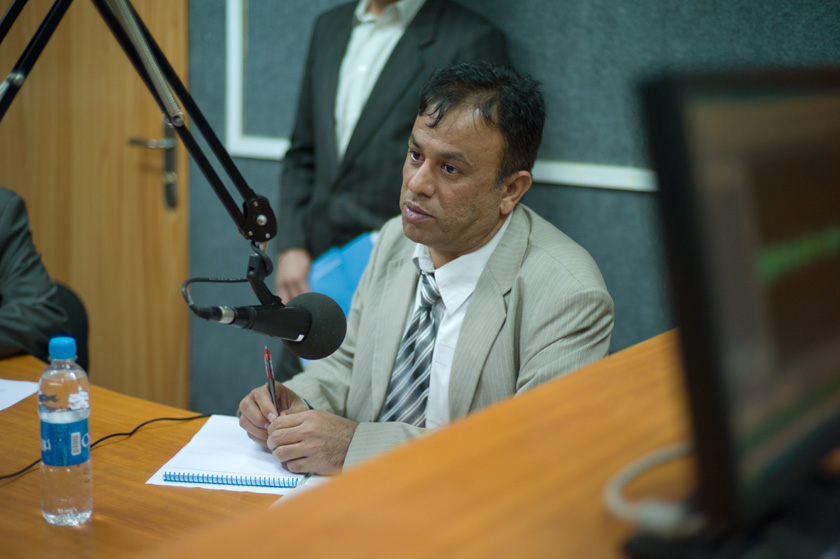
L1002750Refrigerator